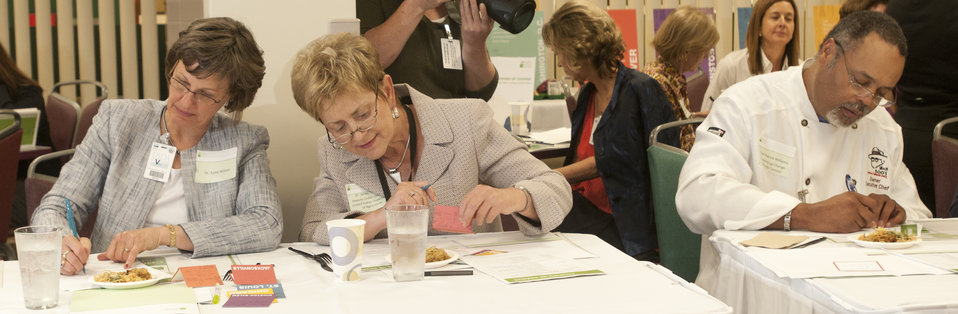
Agriculture Deputy Under Secretary for Food, Nutrition and Consumer Services Janey Thornton (center) judges food submissions at the Cooking Up Change, National Healthy Cooking Competition at the USDA in Washington, DC on Monday, May 23, 2011.